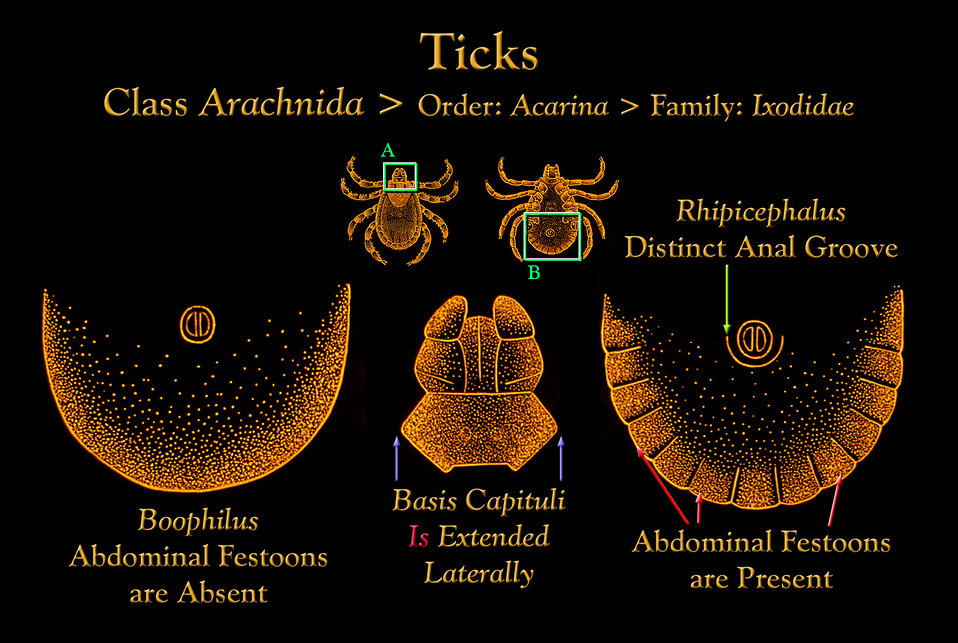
This illustration depicts tick morphology associated with the presence of a laterally extended basis capituli.